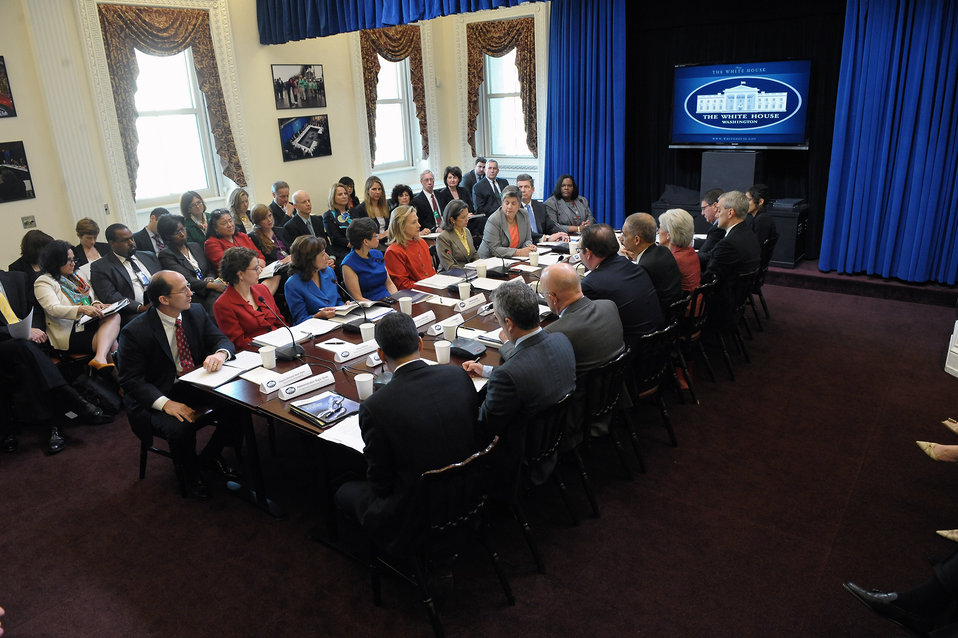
Secretary Clinton Chairs the Interagency Task Force to Monitor and Combat Trafficking in Person

U.S. Secretary of State Hillary Rodham Clinton chairs the President’s Interagency Task Force to Monitor and Combat Trafficking in Persons in Washington, D.C. on March 15, 2012.